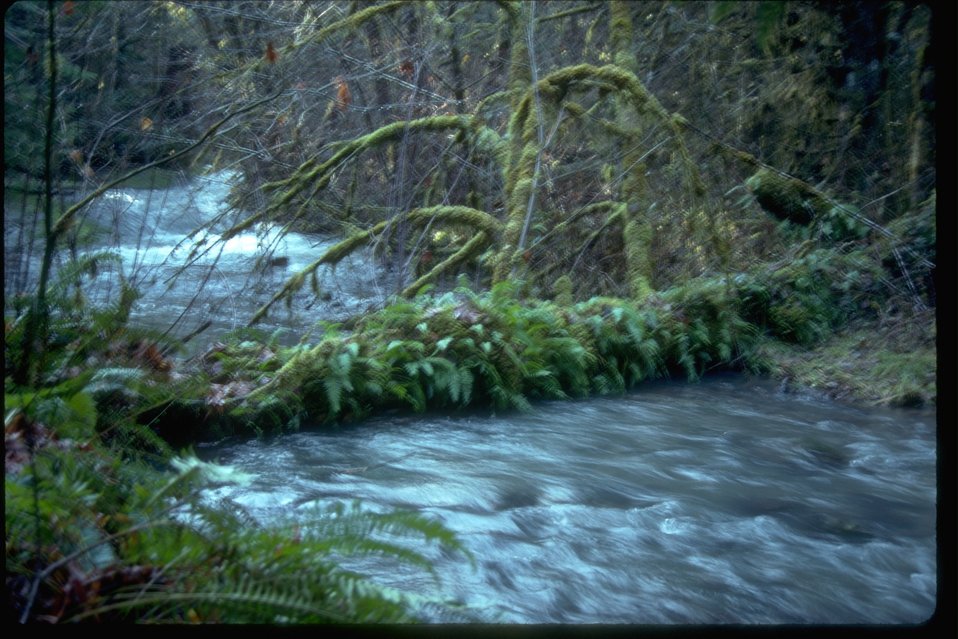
Instream structure (weir) in stream of Western Oregon.